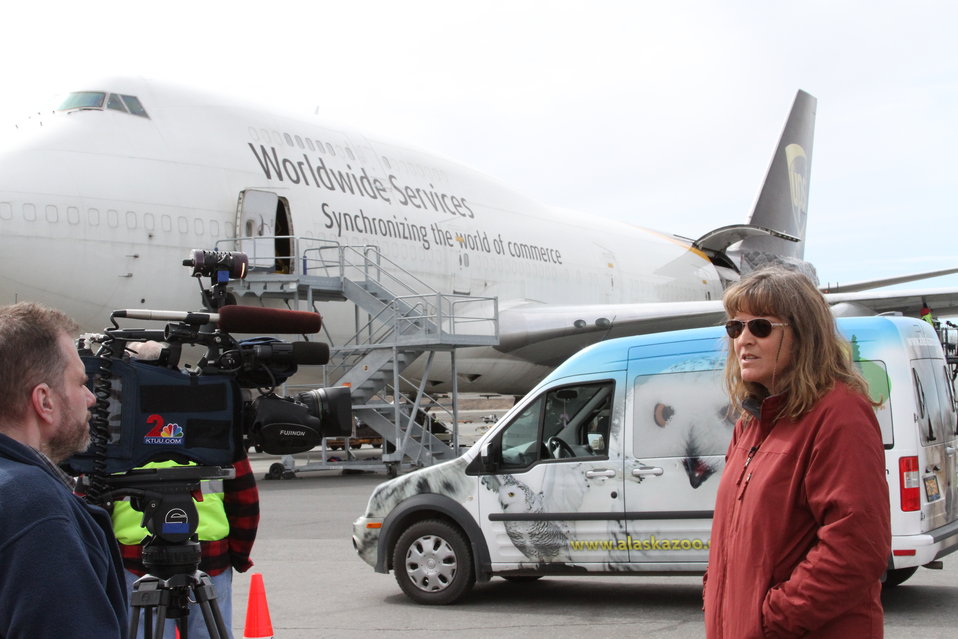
miller interview